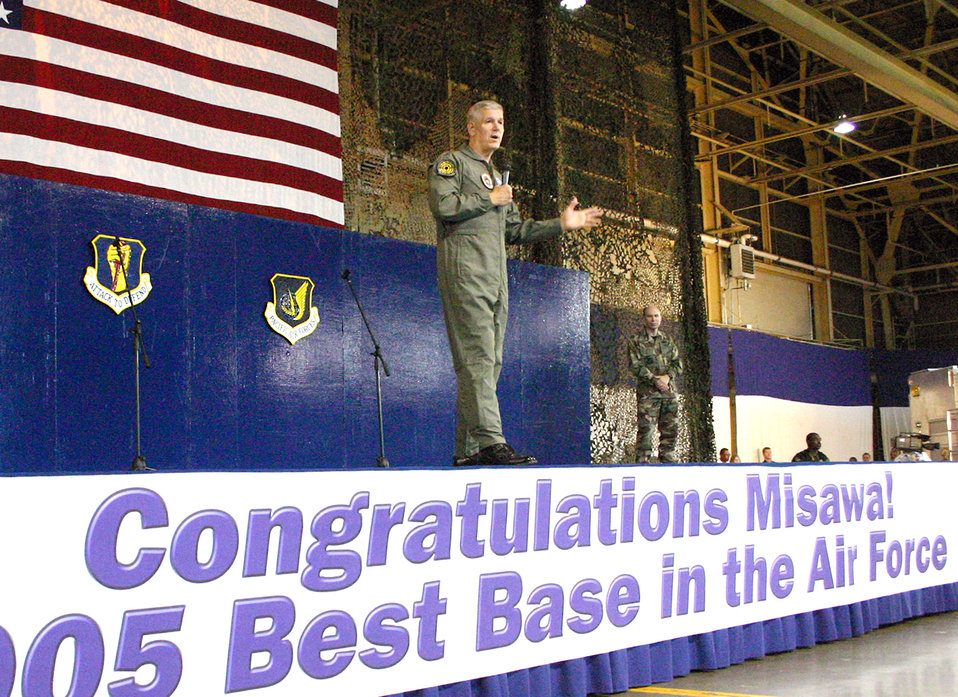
Paying a visit

MISAWA AIR BASE, Japan -- Chairman of the Joint Chiefs of Staff Gen. Richard B. Myers addresses Airmen here during a United Service Organizations show Aug. 22. General Myers and USO entertainers visited Kosovo, Germany, Iraq, Afghanistan and South Korea before stopping in Japan.